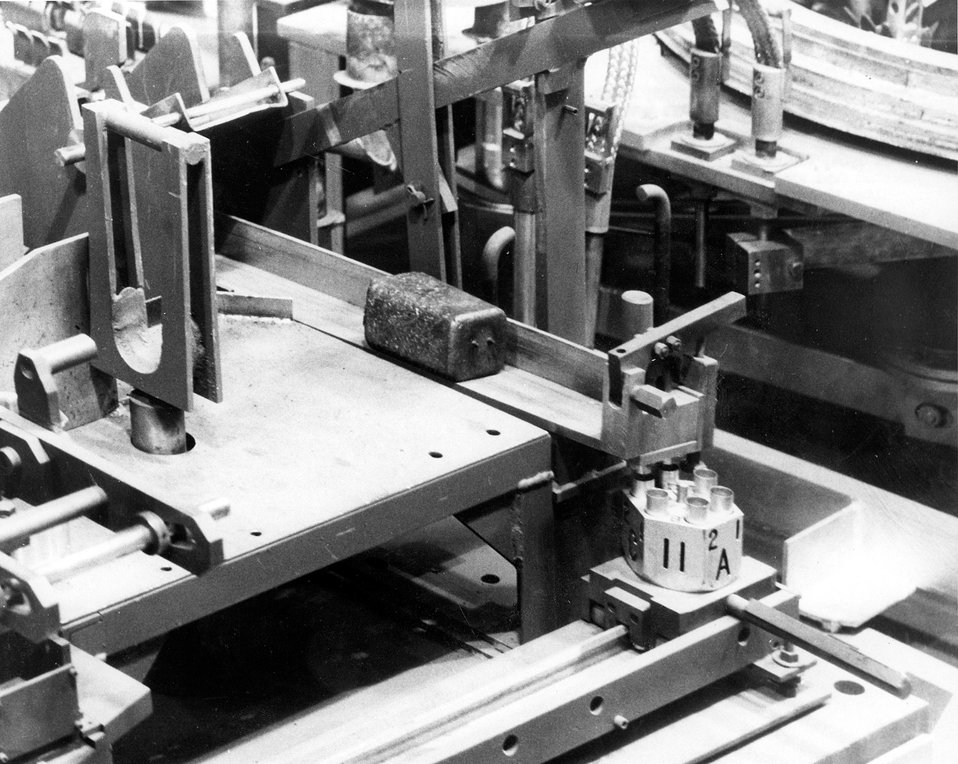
EBR-2 Fuel...The AEC's Experimental Breeder Reactor No. 2 (EBR-2) at the National Reactor Testing Station in Idaho began producing electric power in August 1964, and during September the first irradiated fuel elements were started through the recycling process in the integrated fuel reprocessing system. The EBR-2 is the first such fully integrated plant. Circa 1965.